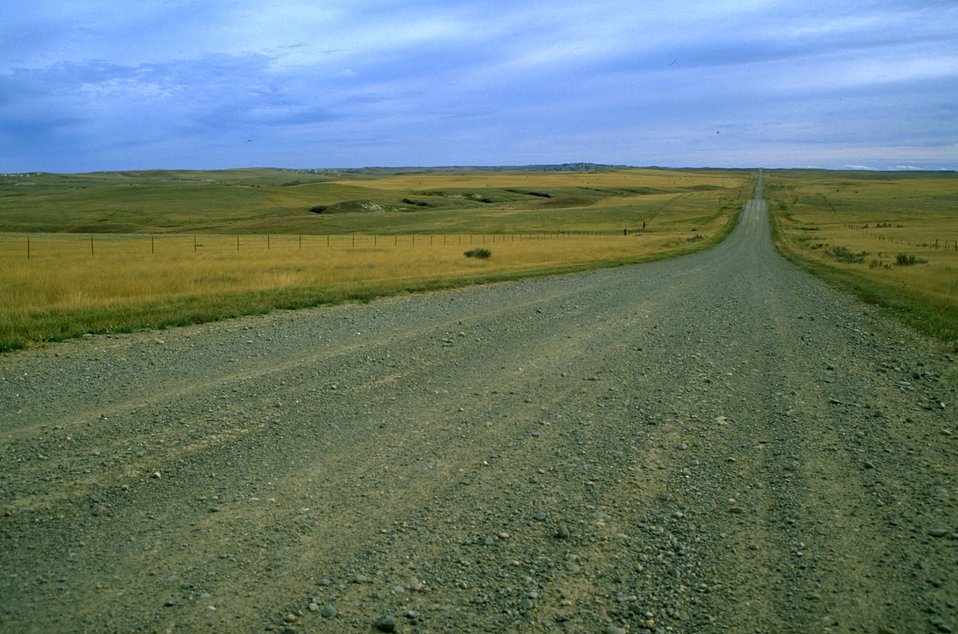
Road through the Big Sky Back Country Byway